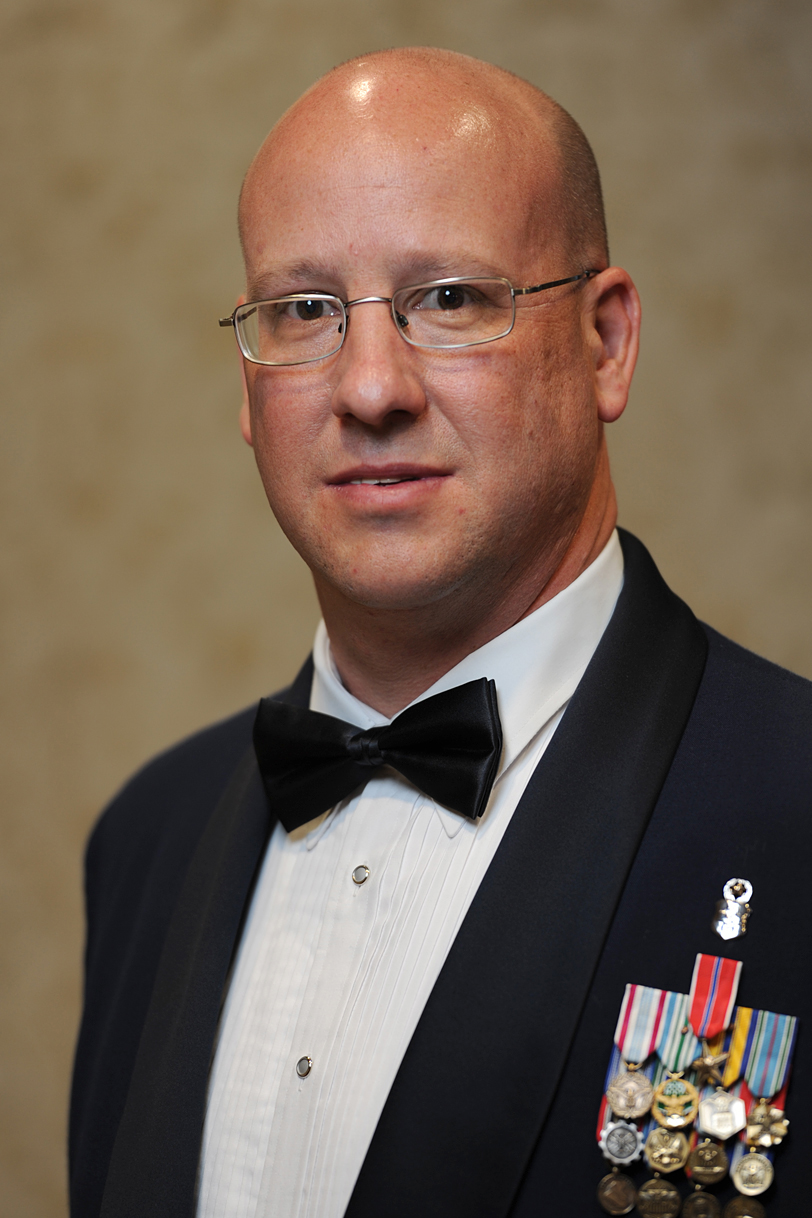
White House honors Iraq veterans

Master Sgt. Shane La Caillade represented Missouri during a White House dinner honoring Iraq war veterans. He had deployments to Kirkush, Tallil, Iraq, as well as to Qatar.